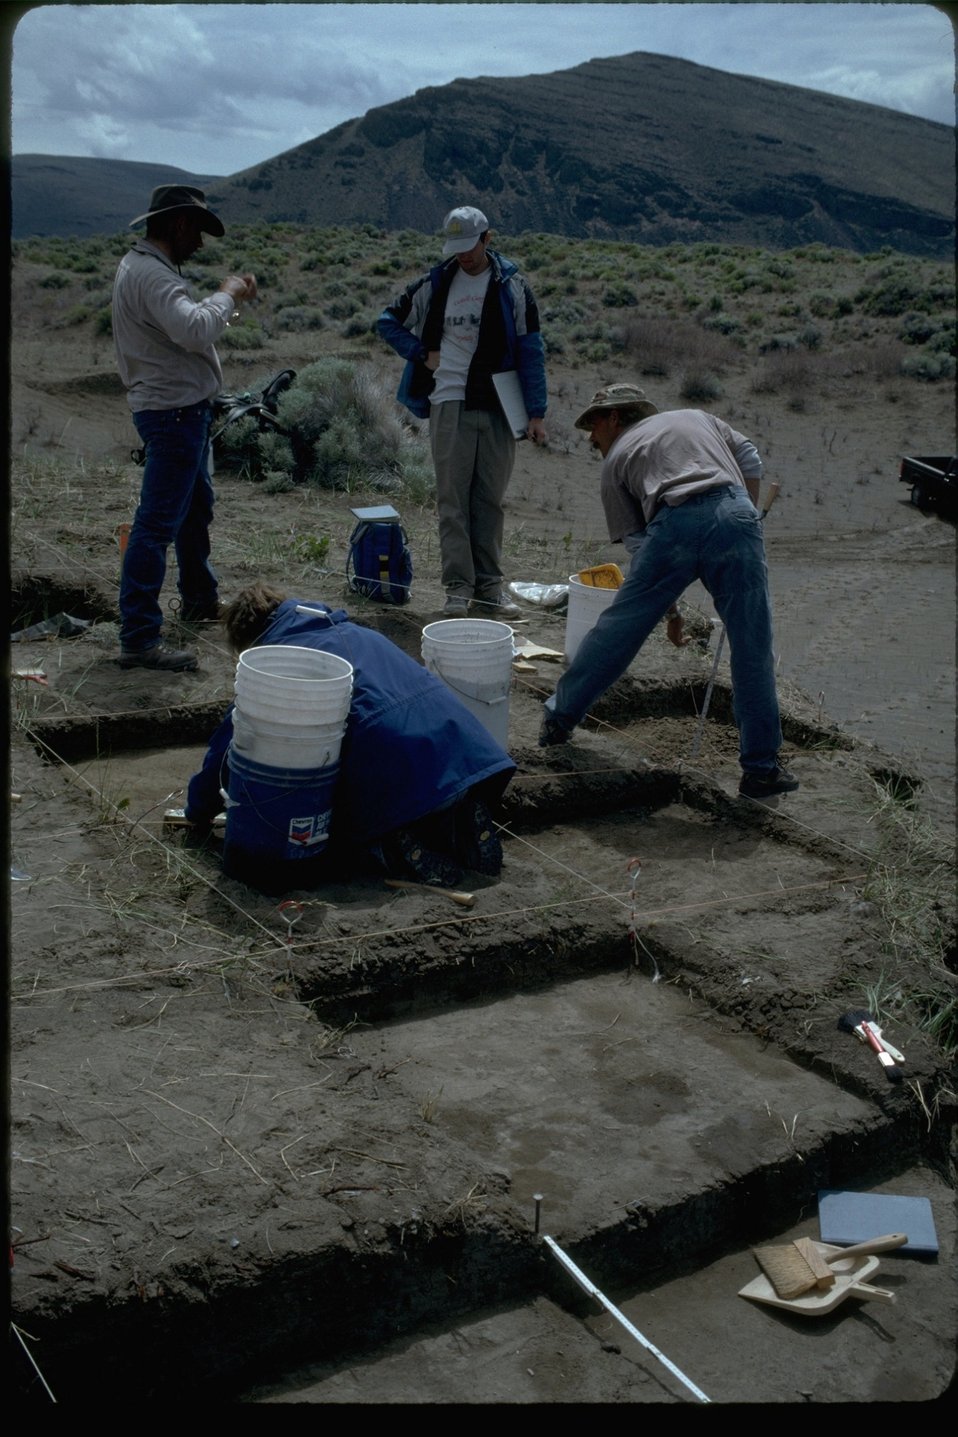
Archaelogical dig by the Washington State University Field School at the Skull Creek Dunes Site in Southeastern Oregon.